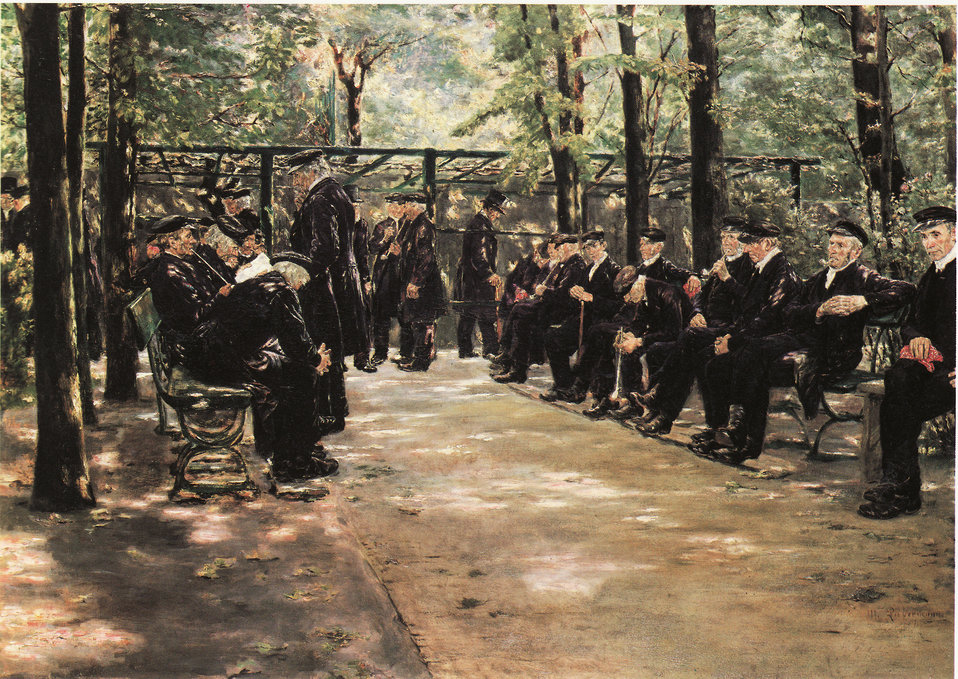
Deutsch: 'Altmännerhaus in Amsterdam', Öl auf Holz. 55,3 x 75,2 cm. Sammlung G. Schäfer, Schweinfurth.